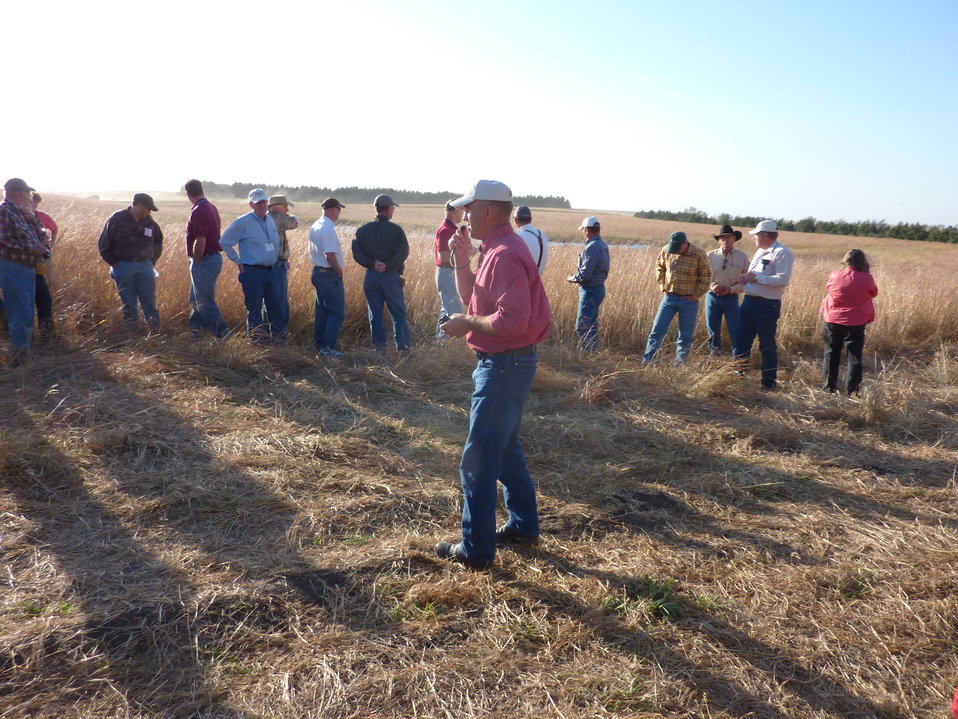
Private Lands Day 2011

South Dakota